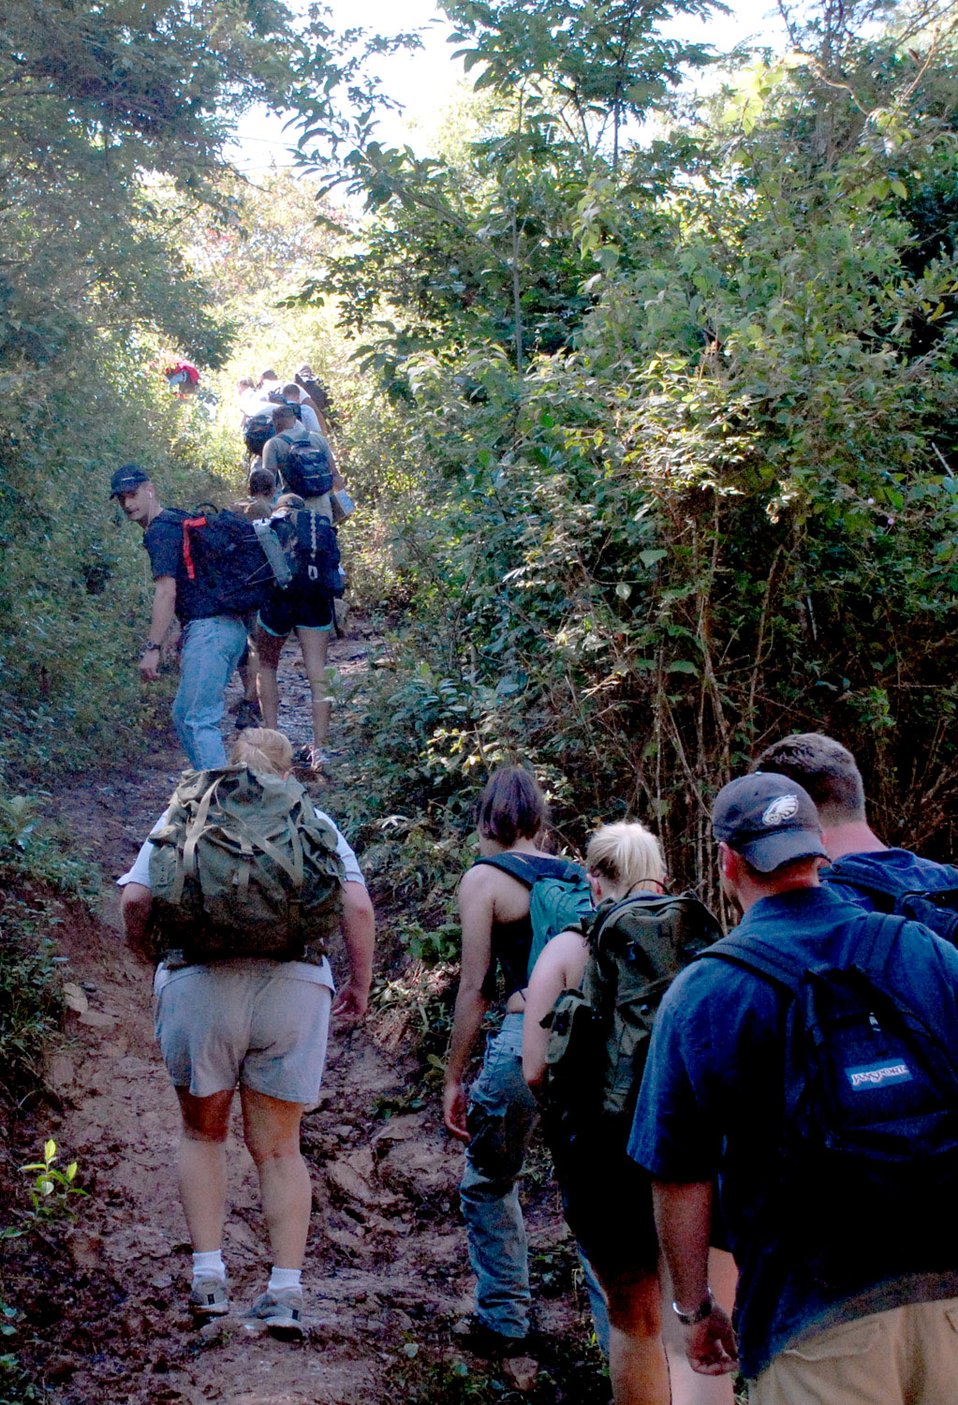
Celebrating Thanksgiving in a whole new way

Airman, Soldiers and Sailors from Joint Task Force-Bravo at Soto Cano Air Base, Honduras, traverse a steep trail to deliver food to a local village Nov. 17 in La Sampedrana, Honduras. The servicemembers participated in an 11-mile round trip hike up the mountain to deliver more than 600 pounds of food. The JTF-Bravo Chapel raised $1,100 to purchase the food.